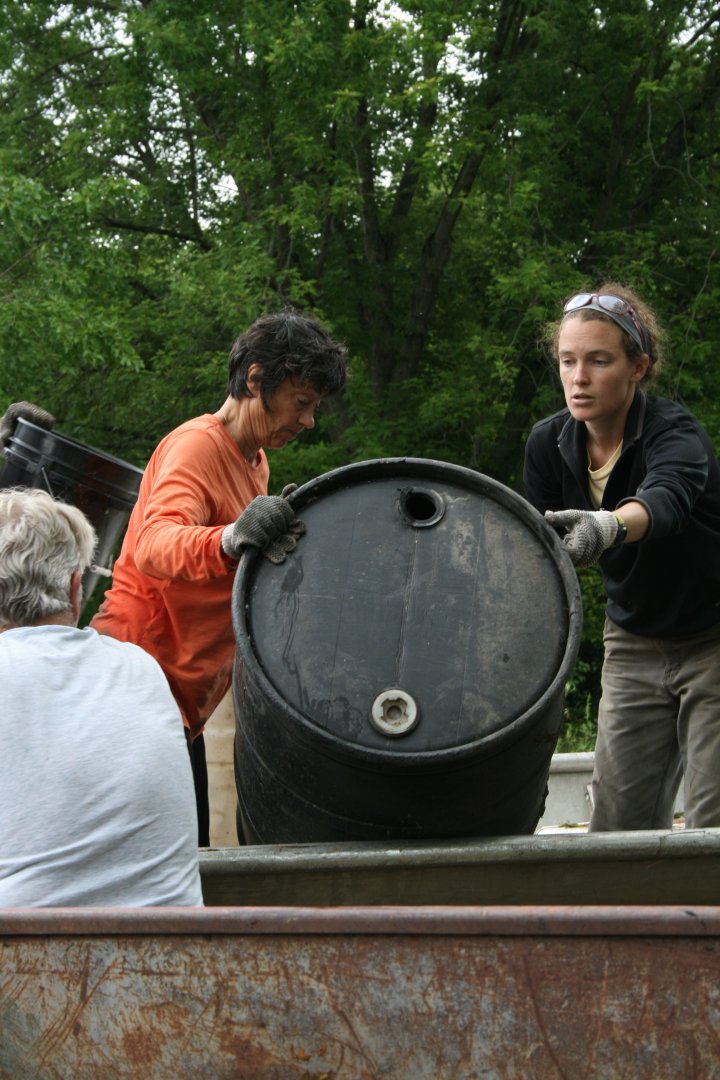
Volunteers Christine and Sarah unload a barrel from the collection boat during The Great Mississippi River Cleanup held June 16, 2012 on the Winona District.